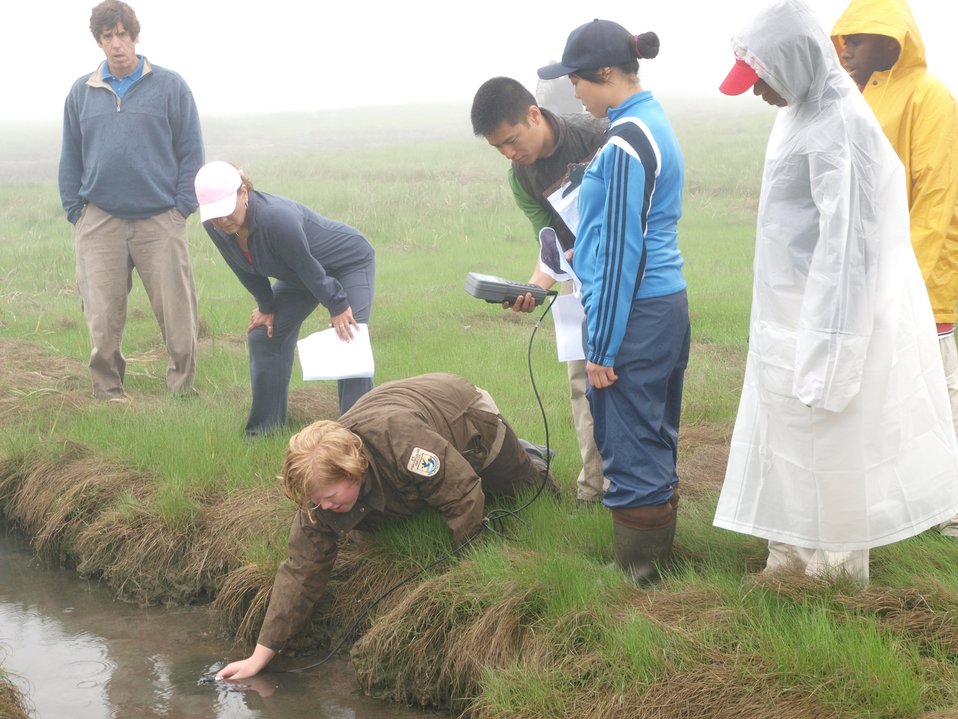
Learning how to measure salinity in a salt marsh

With guidance from Service employees, CIP Students measure the salinity of water in a salt marsh.